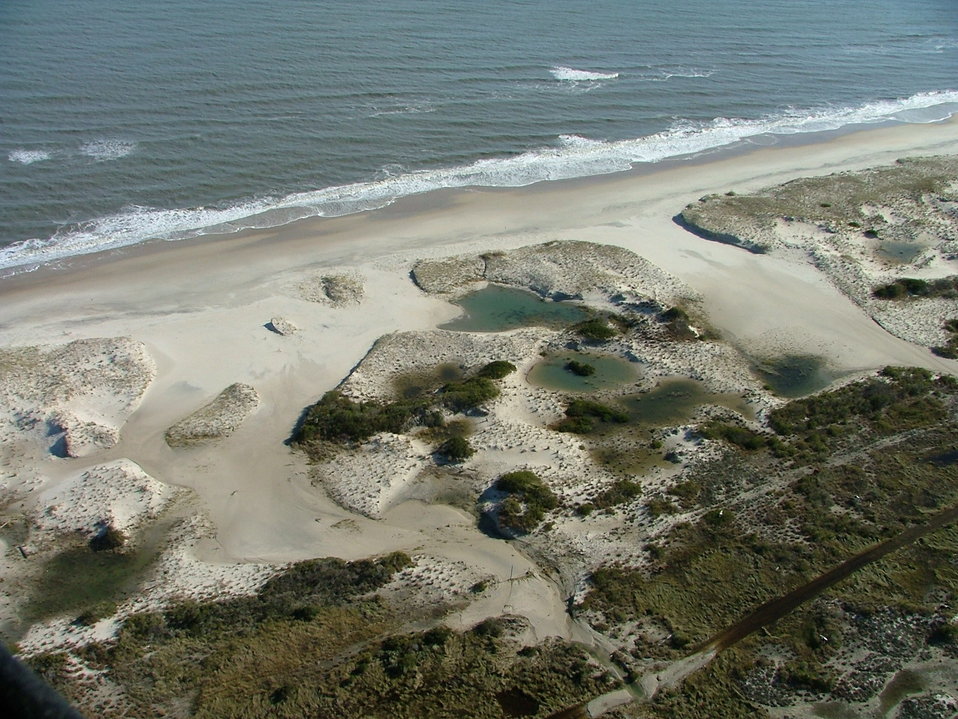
Chincoteague National Wildlife Refuge (VA)

Visible effects of the storm surge along the shore.